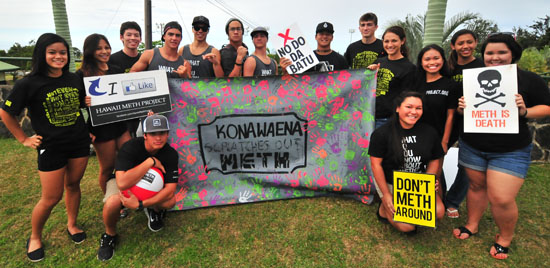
Hawaii Meth Project, NDFW 2013

Konawaena, Hawaii. In conjunction with National Drug Facts Week (Jan. 28-Feb. 3), the Hawaii Meth Project and it’s Teen Advisory Council member Mahealani Yoshida hosted “Blackout Meth Day” on Wednesday, Jan. 30 at Konawaena High School to raise awareness about the “Not Even Once” message.